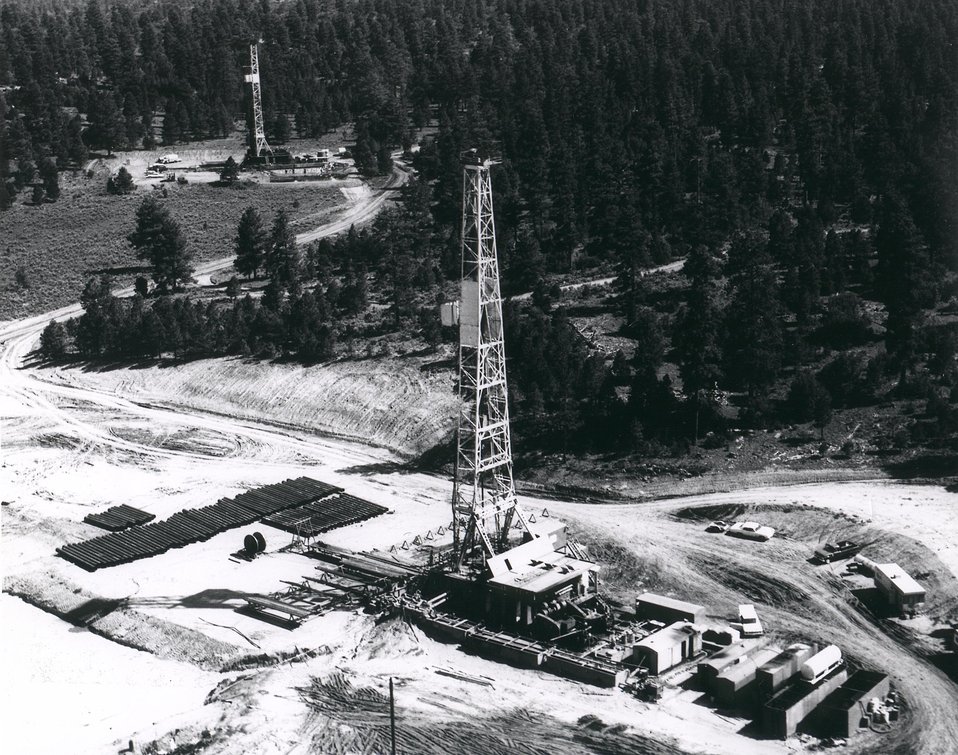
The site of Project Gasbuggy, east of Farmington, New Mexico. The rig in the foreground drills a hole for the nuclear device. Circa 1967.